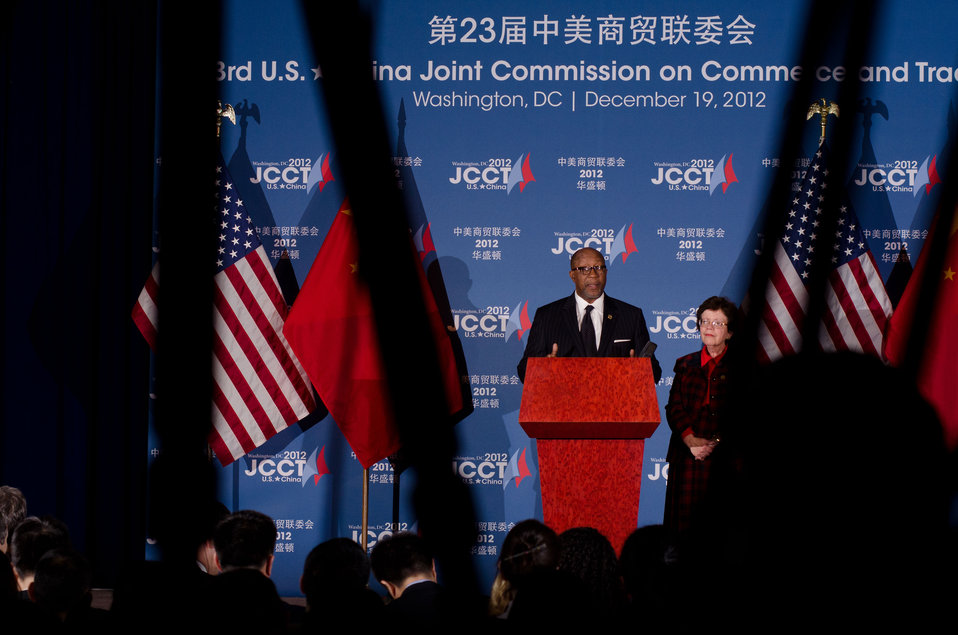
U.S. Trade Representative Ron Kirk and Acting U. S. Commerce Secretary Rebecca Blank are seen between tripod legs of news cameras, as they listen and respond to questions from international news media journalists, at the 23rd Session of the U.S. China Joint Commission on Commerce and Trade (JCCT) at the Andrew W. Mellon Auditorium in Washington, D.C. on Wednesday, Dec. 19, 2012. The JCCT holds high-level plenary meetings on an annual basis to review progress made by working groups that focus on a wide variety of trade issues. These working groups meet throughout the year to address topics such as intellectual property rights, agriculture, pharmaceuticals and medical devices, information technology, tourism, commercial law, environment, and statistics.